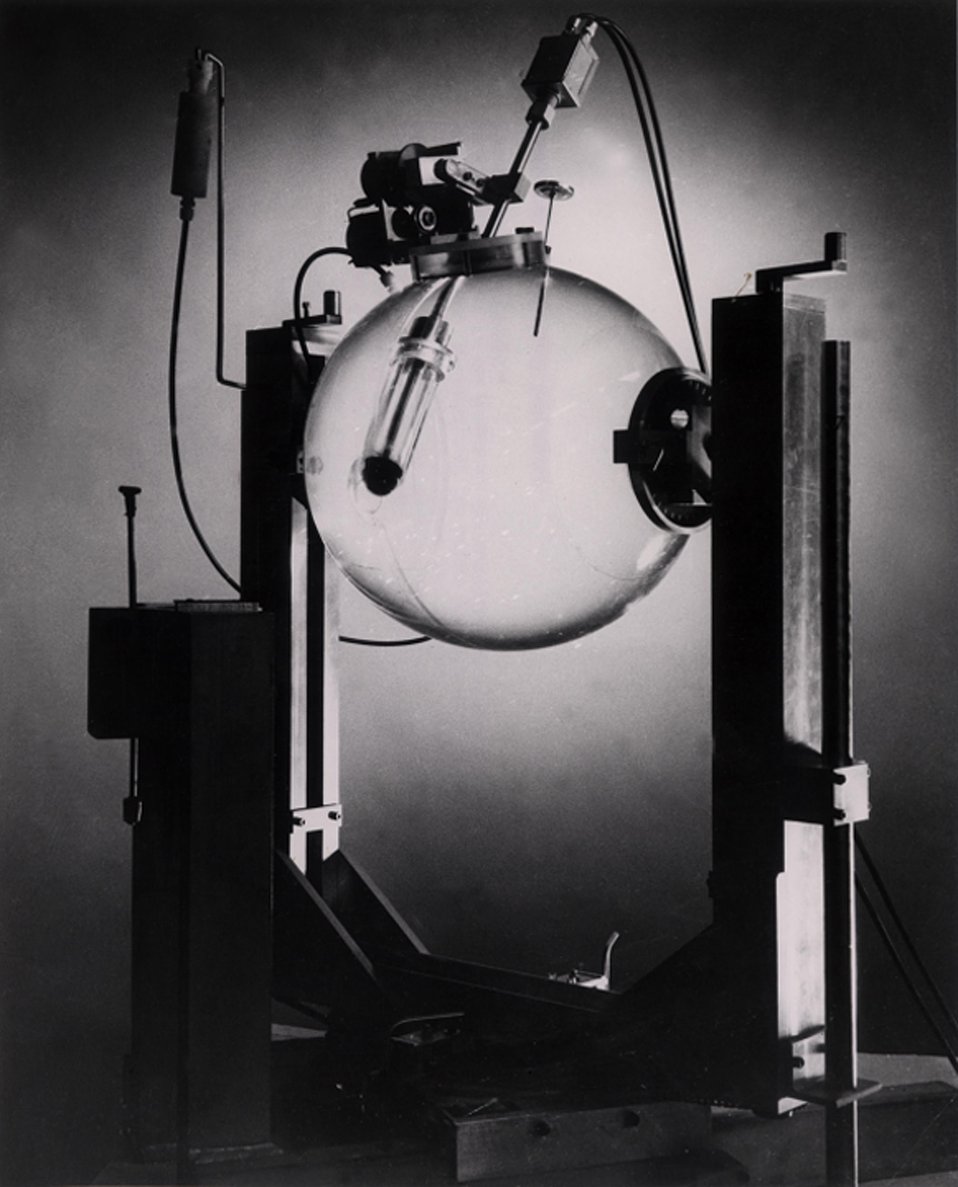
Apparatus designed to determine the total physical dose at a specific point in simulated tissue that results from the interaction of high-energy protons with materials of the space capsule or with the tissue itself.